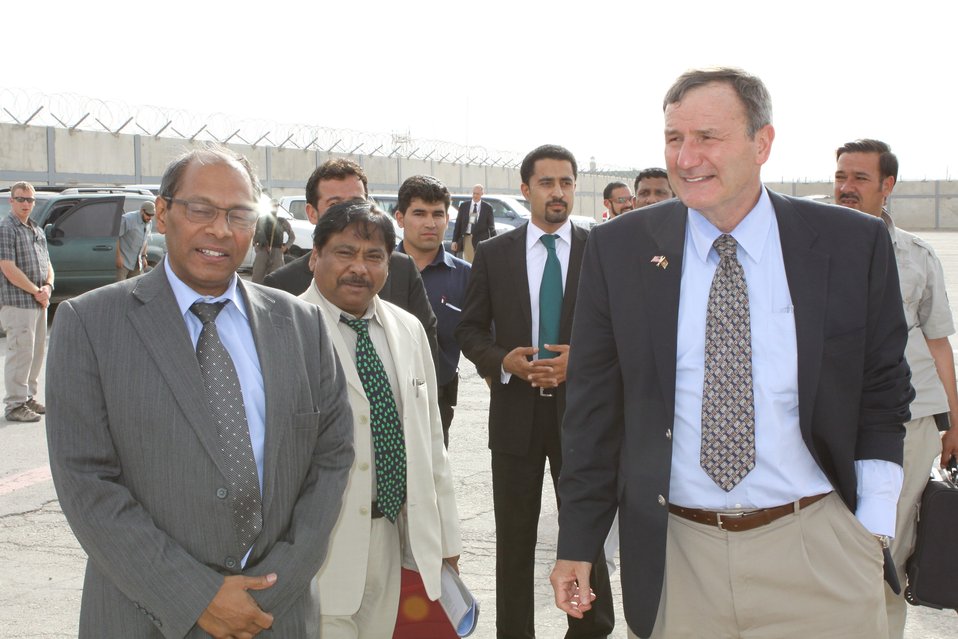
100525 Hirat Marble Conference 887